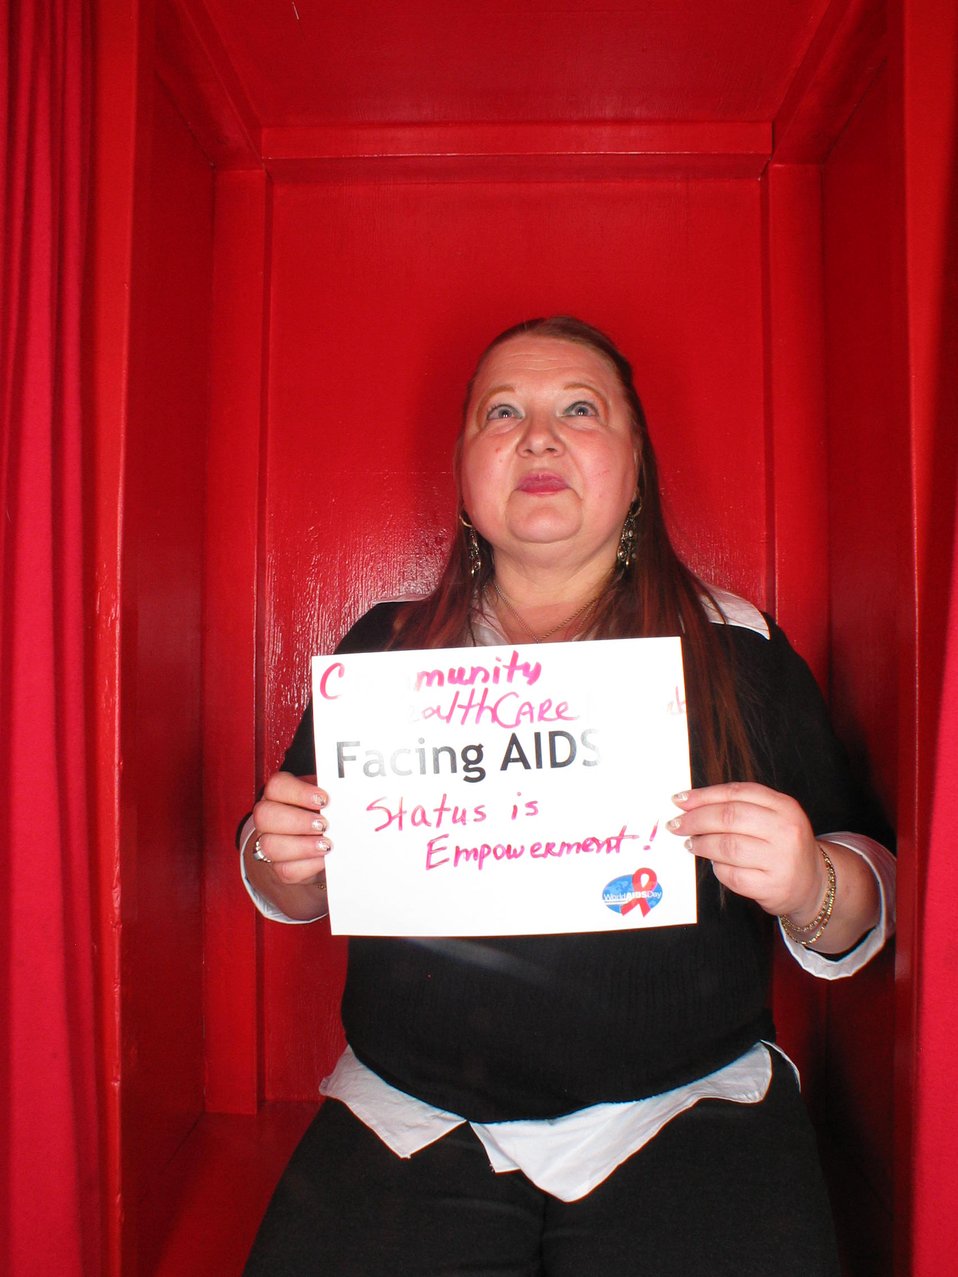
Facing AIDS status is empowerment.